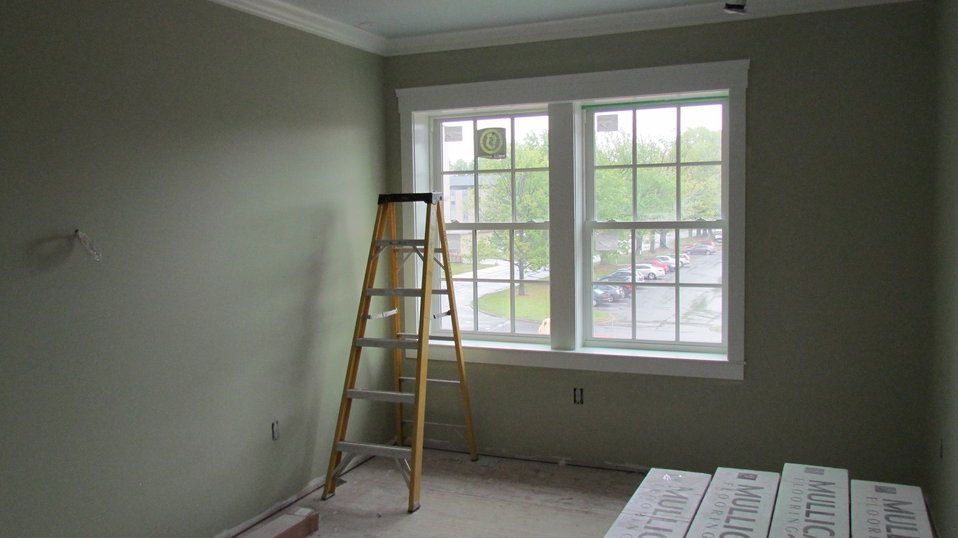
Interior finish of bedroom located on the southeast corner of second floor of facility.